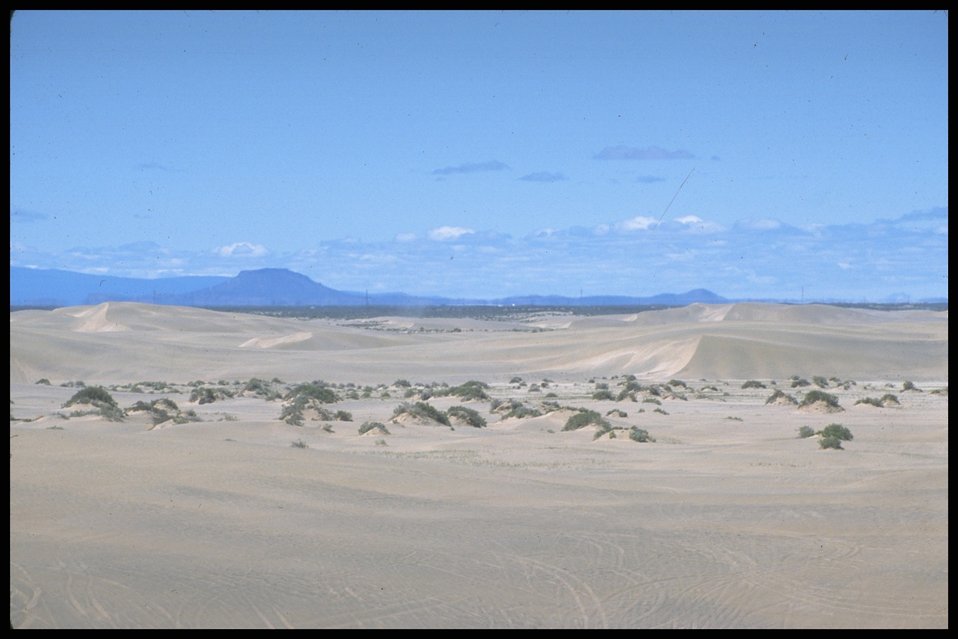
Scenic view of Sand Dunes, Lakeview District.